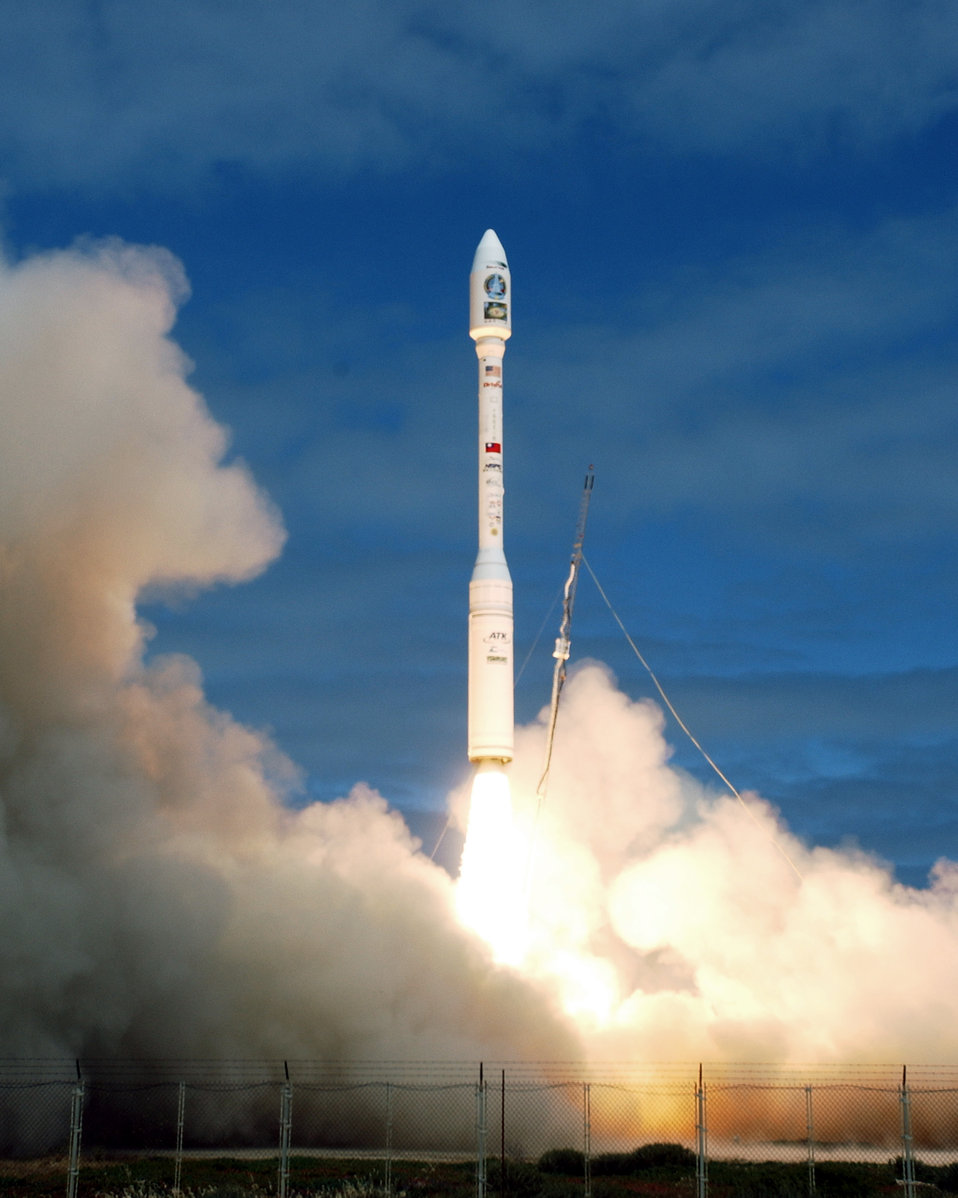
Rocket launch successful

VANDENBERG AIR FORCE BASE, Calif. -- A Taurus XL rocket launches from here May 20 carrying a remote sensing satellite. The satellite will monitor the terrestrial and marine environments and natural resources throughout Taiwan, its remote islands and the surrounding ocean.